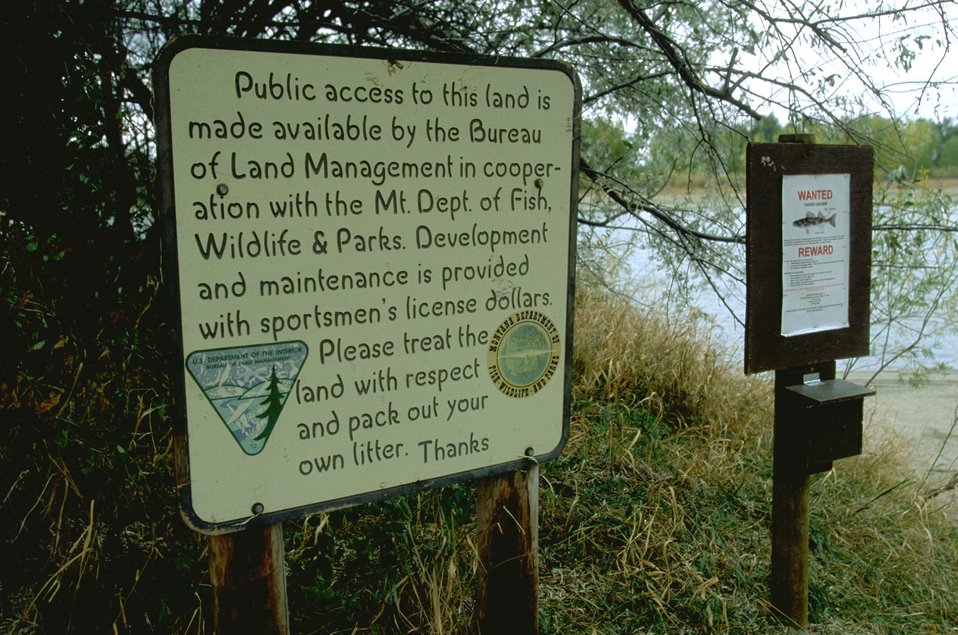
Information signs at the Howrety Island boat ramp